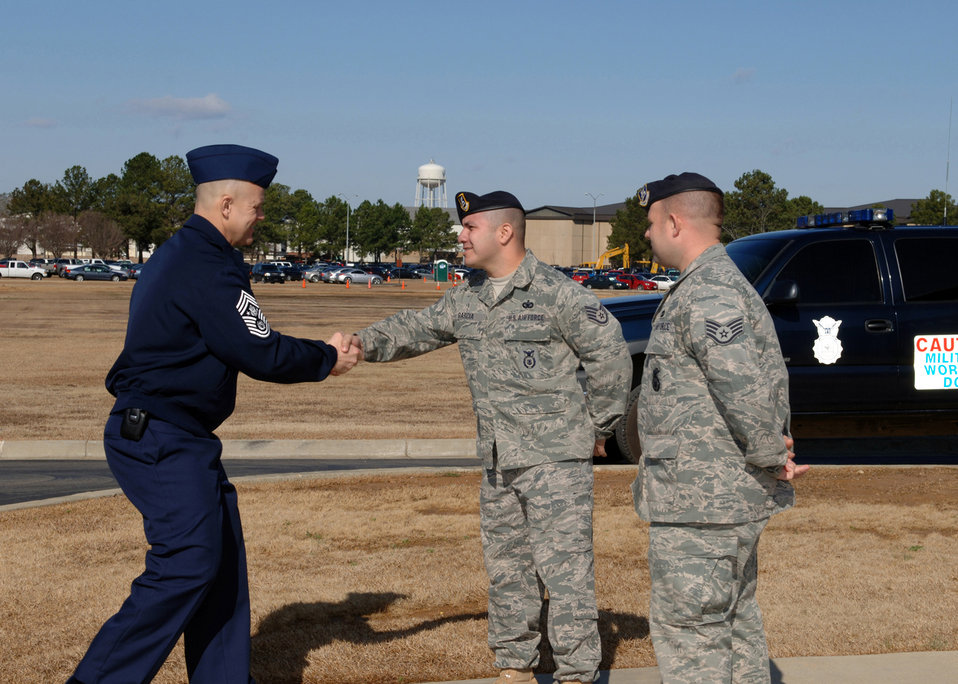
Chief Master Sgt. of the Air Force James A. Roy greets Staff Sgts. Juan Garcia and Thomas Blandino during his visit Jan. 25, 2010, to Columbus Air Force Base, Miss.